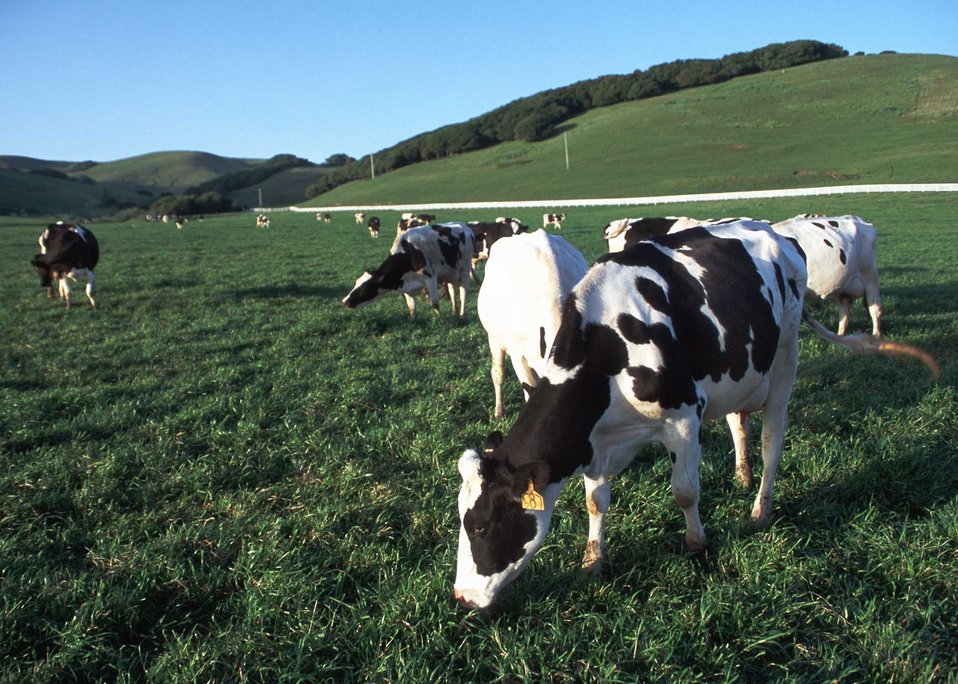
Dairy cattle in a field

Dairy cattle in Sonoma County, CA.